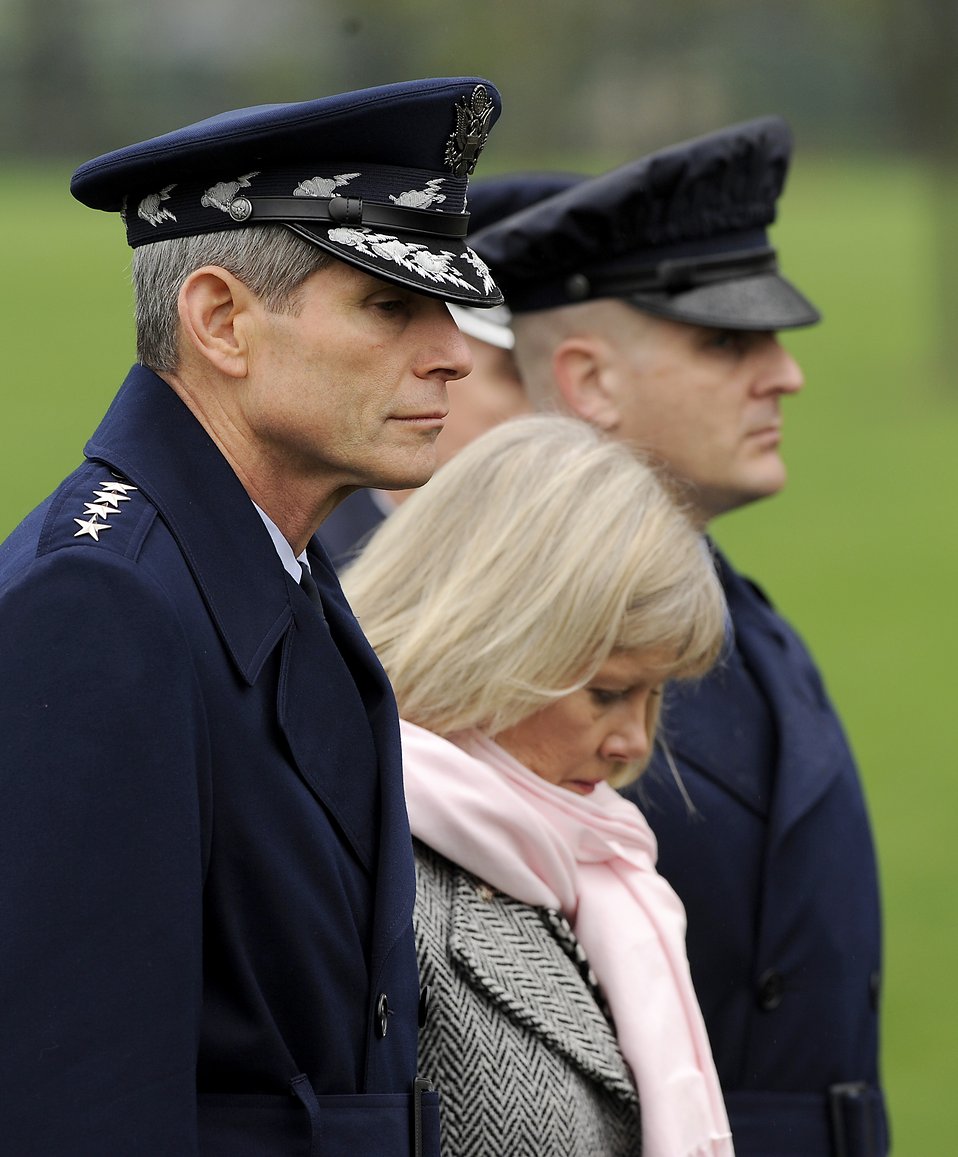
Maj. Gen. Jeanne M. Holm Funeral

Air Force Chief of Staff Gen. Norton Schwartz, his wife Suzie and Master Sgt. Charles Mercurio, from the Air Force District of Washington Ceremonies and Protocol office, honor Maj. Gen. Jeanne M. Holm during her burial March 29, 2010, at Arlington National Cemetery. General Holm was promoted to major general with an effective date of July 1, 1970, and was the first woman in the Armed Services to serve in that grade.